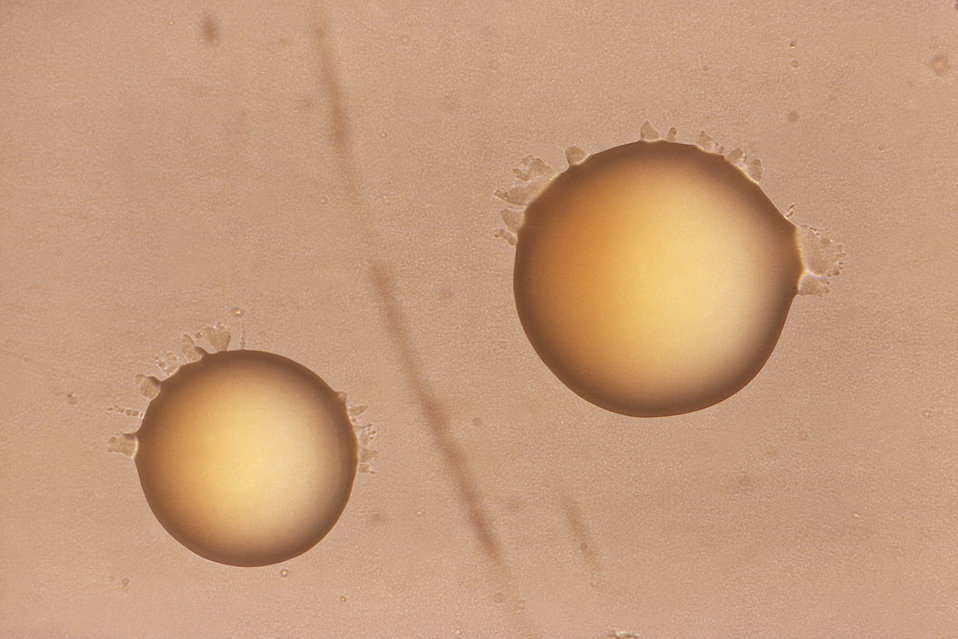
Under epi-illumination mode, which provides illumination, and detection from one side of the sample, in this case a Middlebrook 7H10 agar culture plate, this image depicts two smooth, chromogenic colonies of Mycobacteria bacterial organisms, which given the fact that they were grown in seven days, were classified as being of the 'rapid grower' colonial types.